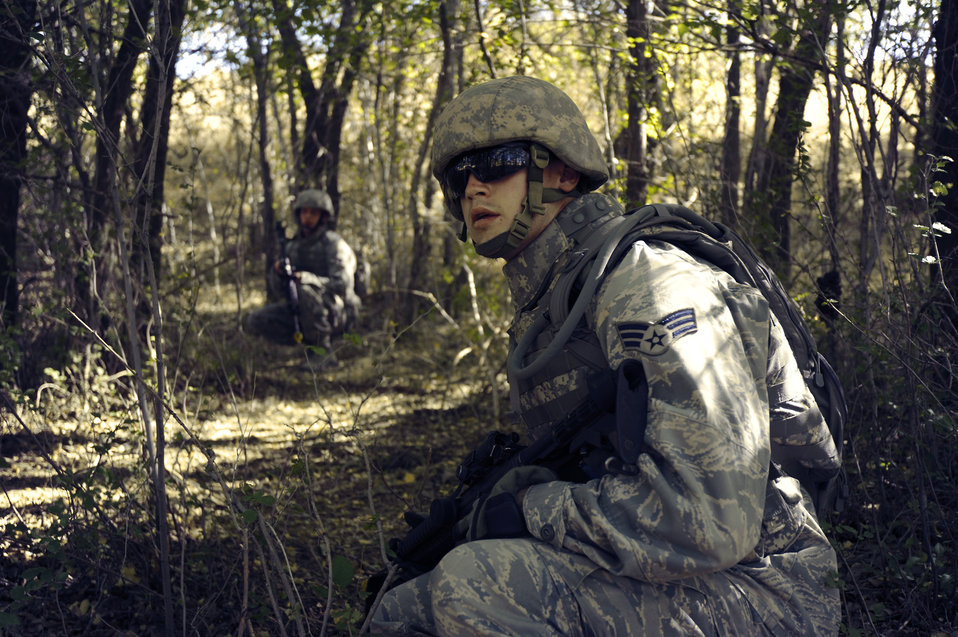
Keeping ready

Airmen crouch in the low ready position while doing a practical exercise during the 75th Security Forces Combat Readiness Training course at Hill Air Force Base, Utah, Sept. 17, 2010. The course provides Airman with the basic skills needed to deploy to include tactical movements, land navigation and self aid buddy care.